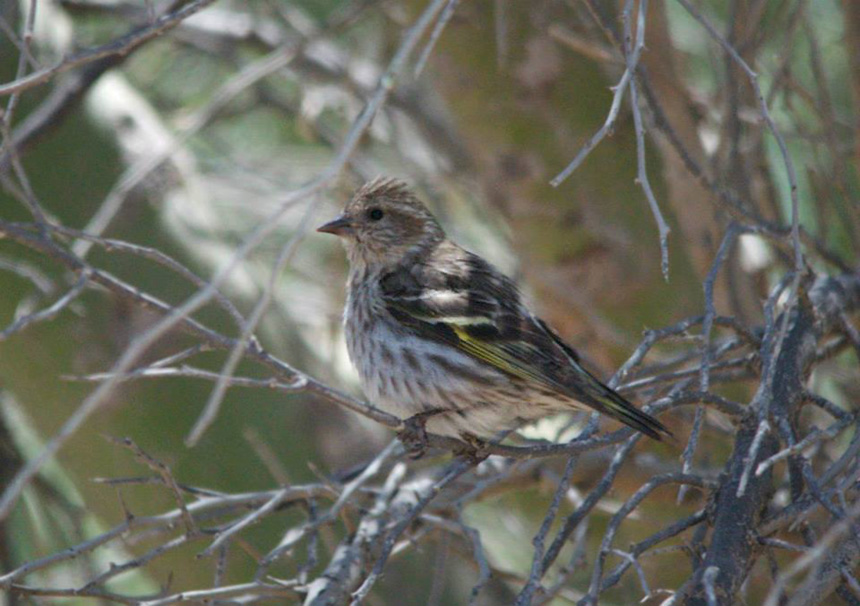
Pine Siskin-1

A pine siskin on a branch at Sonny Bono National Wildlife Refuge in May 2013. This nomadic finch ranges widely and erratically across the continent each winter in response to seed crops. Better suited to clinging to branch tips than to hopping along the ground, these brown-streaked acrobats flash yellow wing markings as they flutter while feeding or as they explode into flight. Flocks are gregarious, and you may hear their insistent wheezy twitters before you see them.